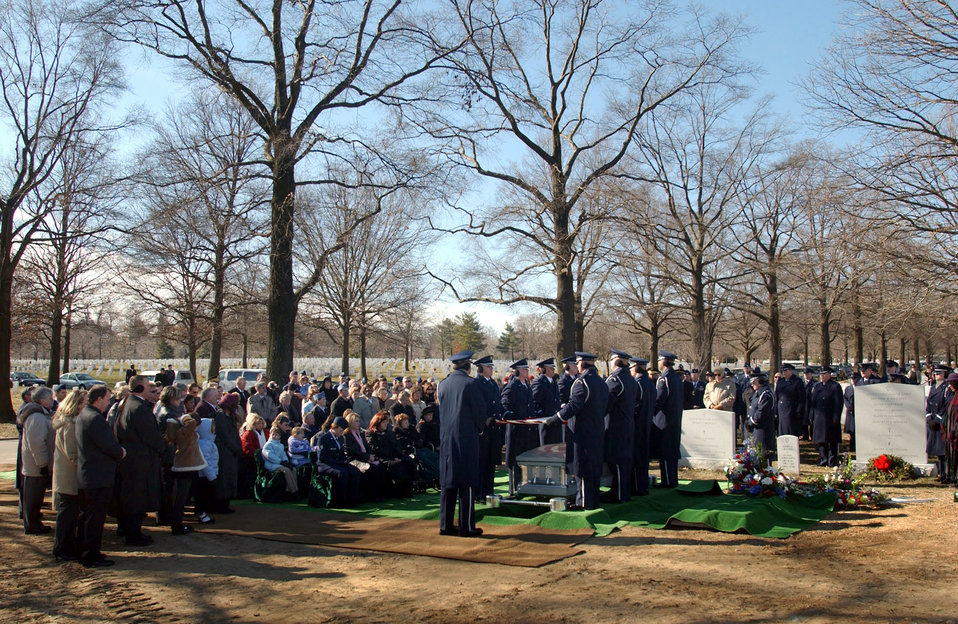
Servicemembers laid to rest

ARLINGTON, Va. -- Air Force Honor Guard pallbearers fold a flag over the remains of one of the military members who were killed when their MH-53M Pave Low helicopter crashed Nov. 23 in Afghanistan. A full-honor mass funeral was held at Arlington National Cemetery on Jan. 21.